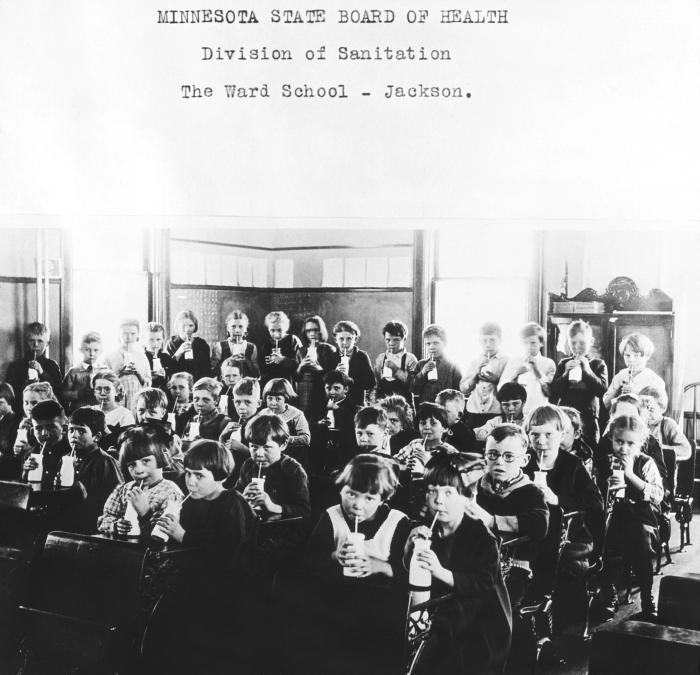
This historic photograph depicted a classroom full of young children who were drinking milk while seated in a schoolroom. The 1922 setting was the Ward School in Jackson, Minnesota. In the early twentieth century, public health practitioners emphasized the importance of unadulterated milk supplies to lowering infant mortality, and to ensuring proper growth in children.